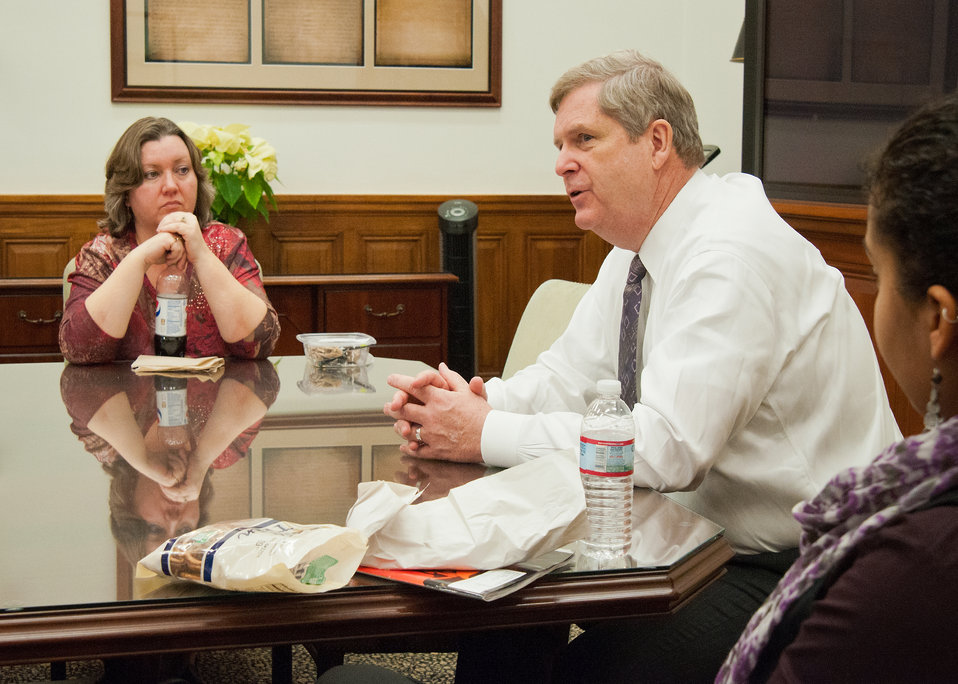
Julie Gordon (left), Special Assistant, Office of Congressional Relations listens to Agriculture Secretary Tom Vilsack (right) discuss the associations we build throughout our careers with staff members of the Office of Congressional Relations during a Brown Bag lunch to discuss the role they play and to thank them for their dedication and diligence in Washington, D.C. on Monday, January 23, 2012.